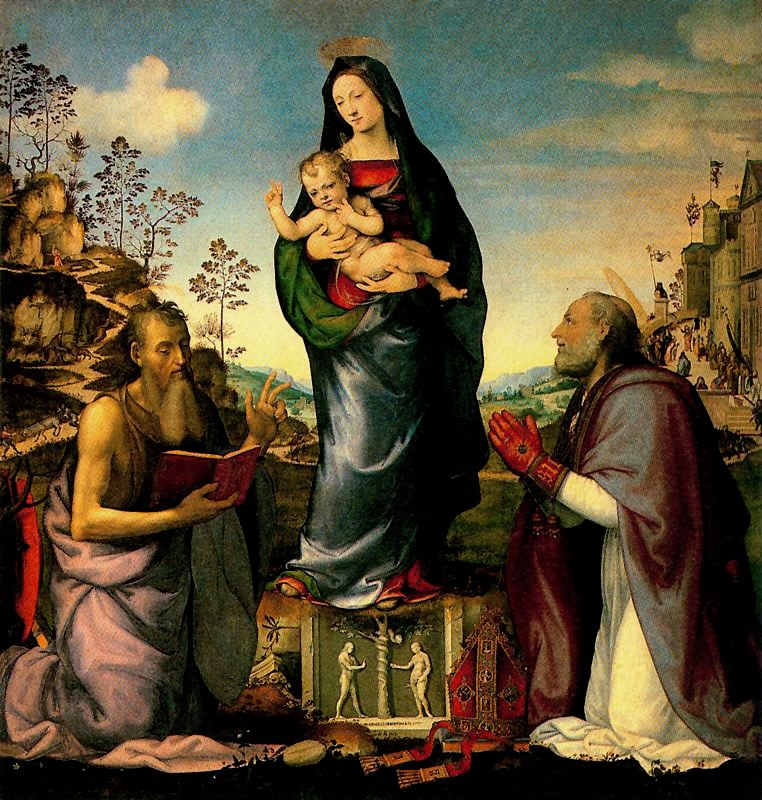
Albertinelli Franciabigio Vièrge et saints